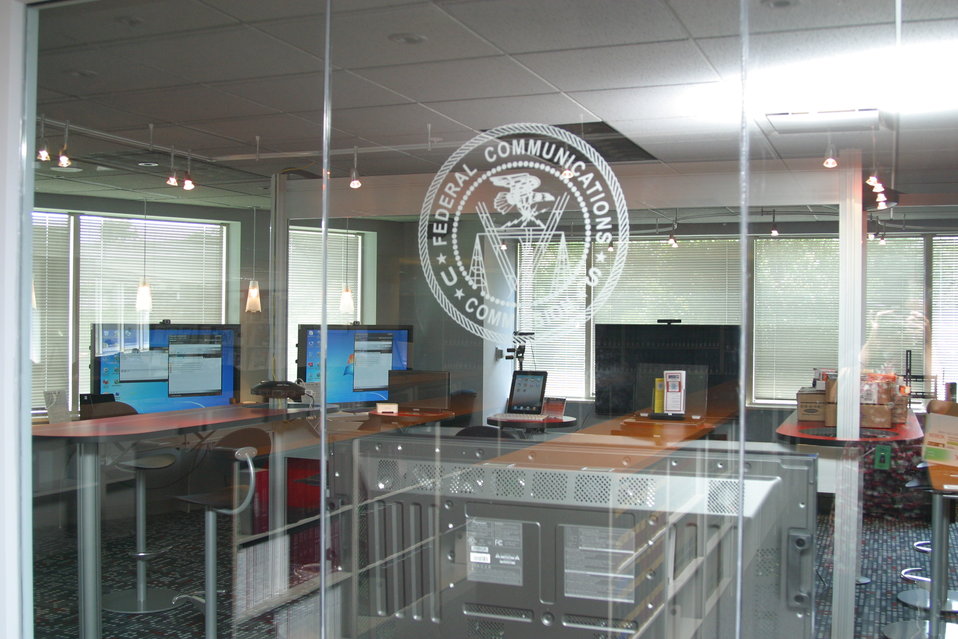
TEC Center

Debuting the FCC TEC Center on Wednesday July 13, 2011